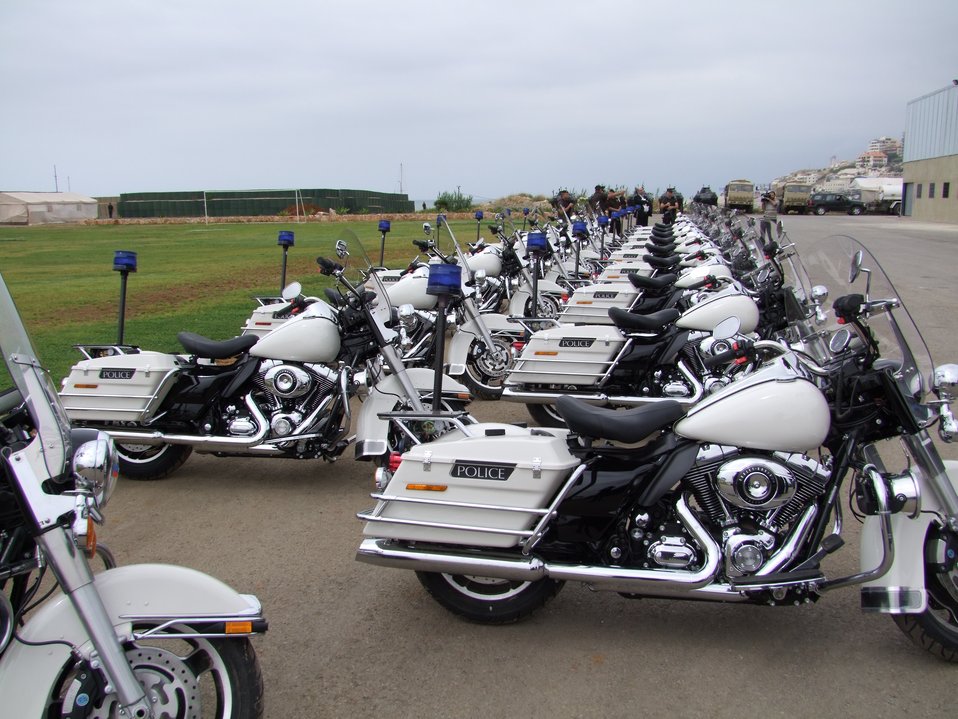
The Bureau of International Narcotics and Law Enforcement Affairs Donates Harley Davidson Police Motorcycles

Harley Davidson police motorcycles donated by the Bureau of International Narcotics and Law Enforcement Affairs to the Lebanese Internal Security Forces at the U.S. Embassy Beirut, May 18, 2010.